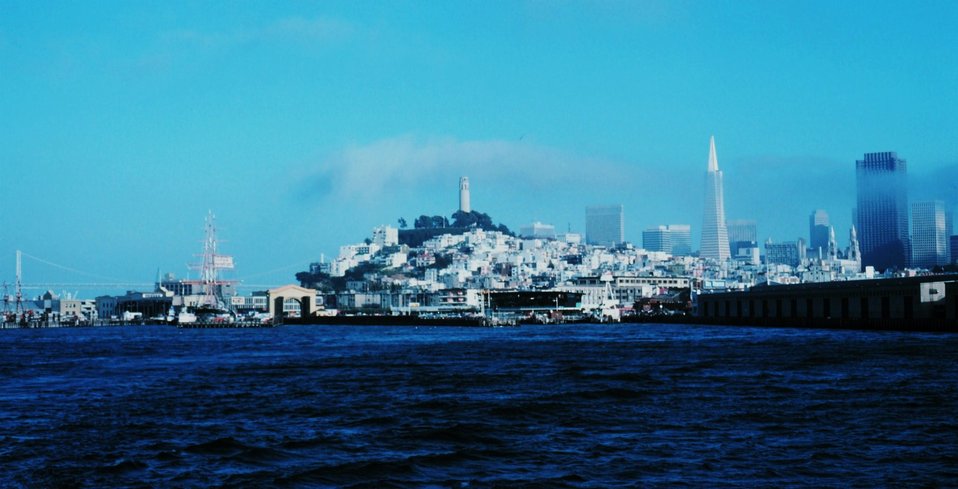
A view of the San Francisco waterfront with Transamerica Pyramid and Coit Tower.